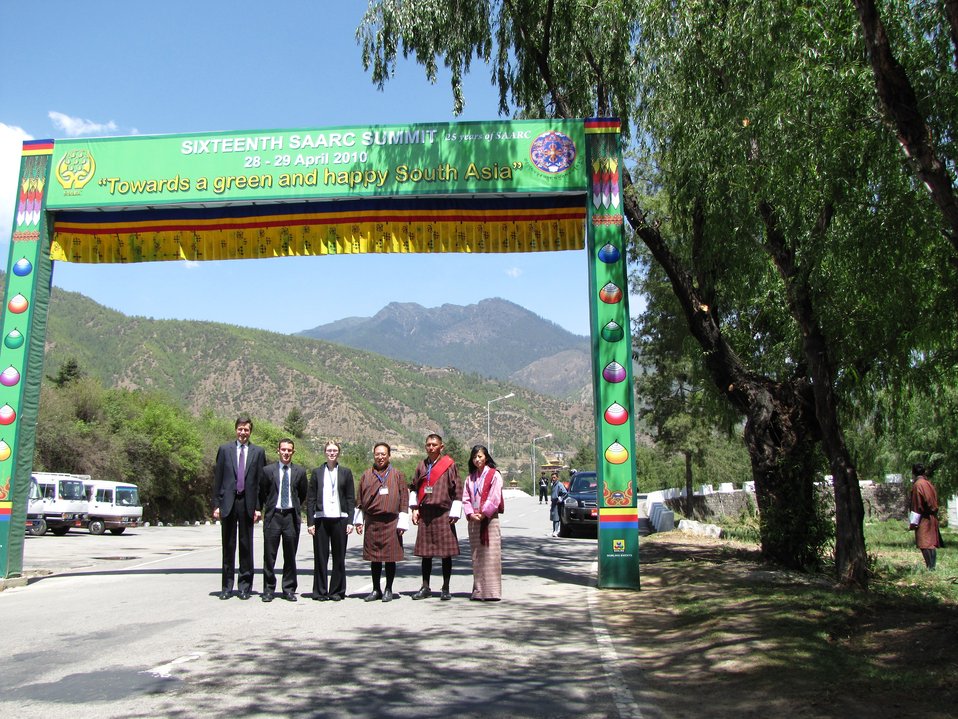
U.S. Delegation and Bhutanese Protocol Officers in Thimphu, Bhutan

The U.S. delegation and Bhutanese protocol officers pose for a photo at the SAARC Summit in Thimphu, Bhutan, on April 28, 2010.